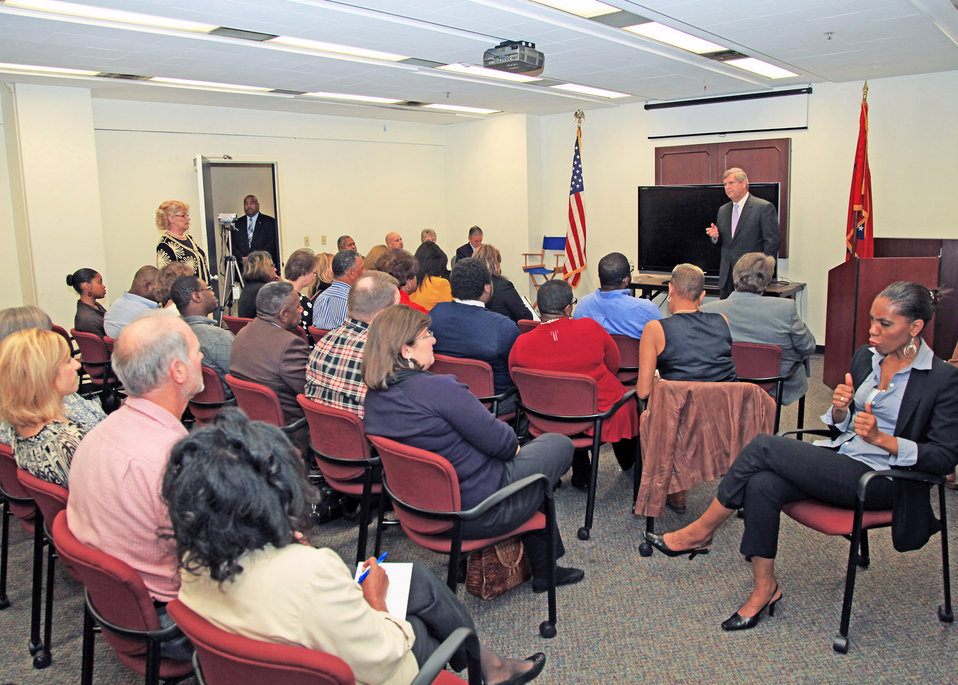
Agriculture Secretary Tom Vilsack visits with U.S. Department of Agriculture (USDA) employees at the Federal Building in Little Rock, AR, on Wednesday, Oct. 30, 2013.